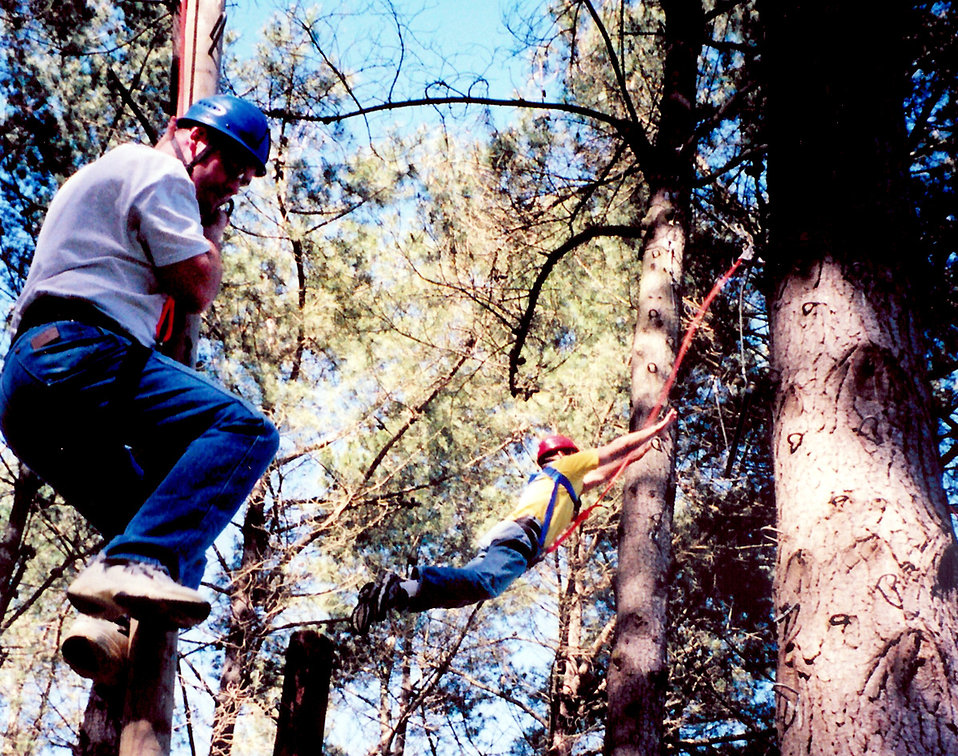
A different viewpoint

PETALUMA, Calif. -- Students at the Coast Guard Chief Petty Officer Academy here navigate the high ropes course during training. The exercise allows students to apply what they have learned about teamwork, trust and self-confidence outside the classroom. The academy reserves 40 slots a year for Air Force senior noncommissioned officers to attend the five-week course.